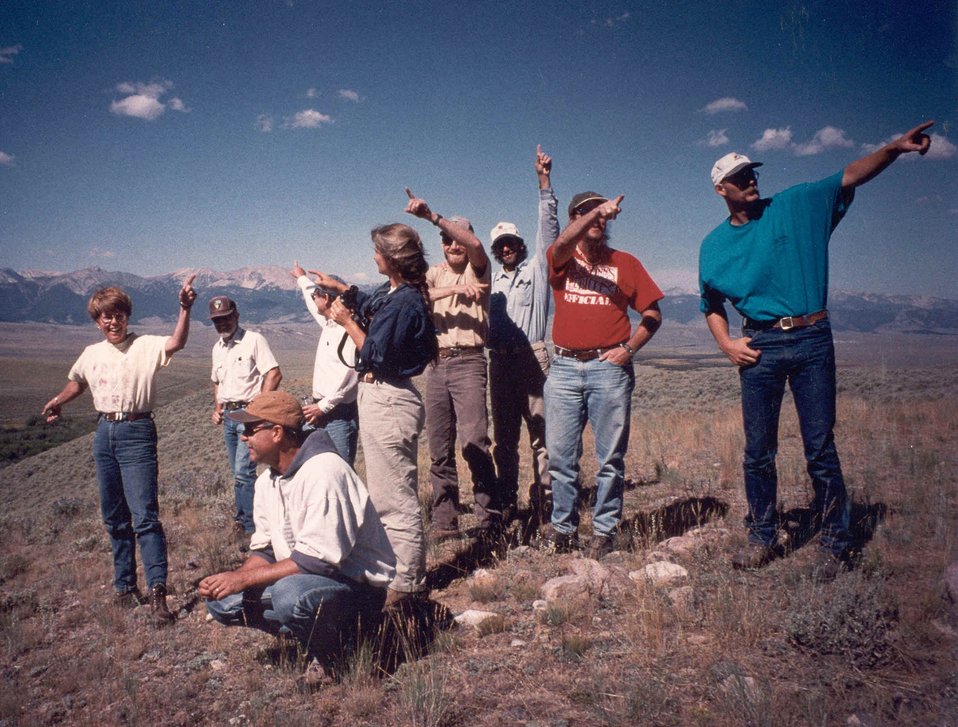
People Salmon Field Office UCSC Upper Columbia Salmon Clearwater District